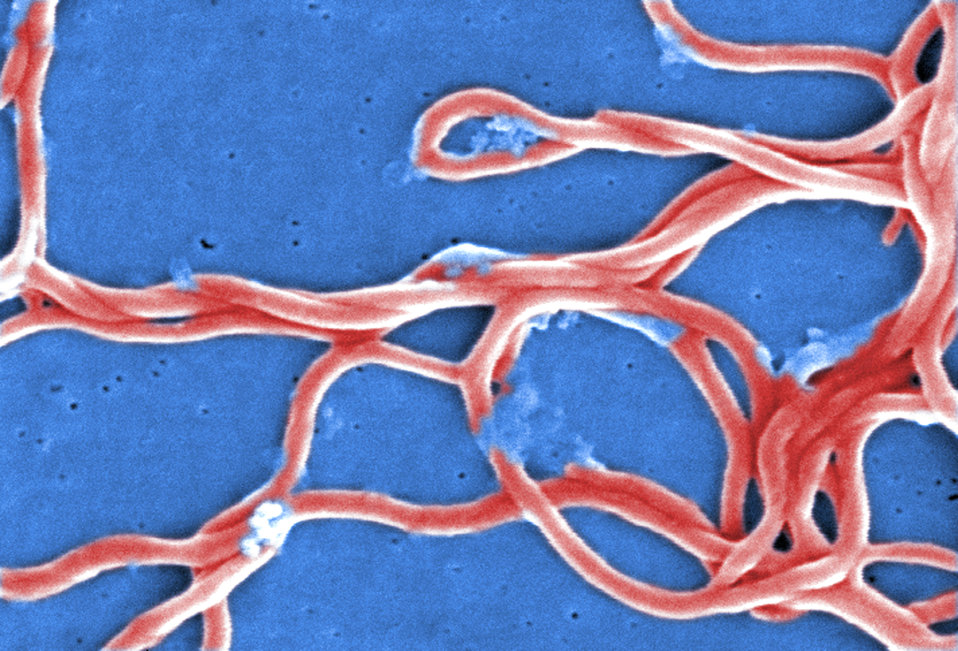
Under a high magnification, this digitally-colorized scanning electron micrograph depicts a grouping of Gram-negative, anaerobic, Borrelia burgdorferi bacteria, which had been derived from a pure culture.